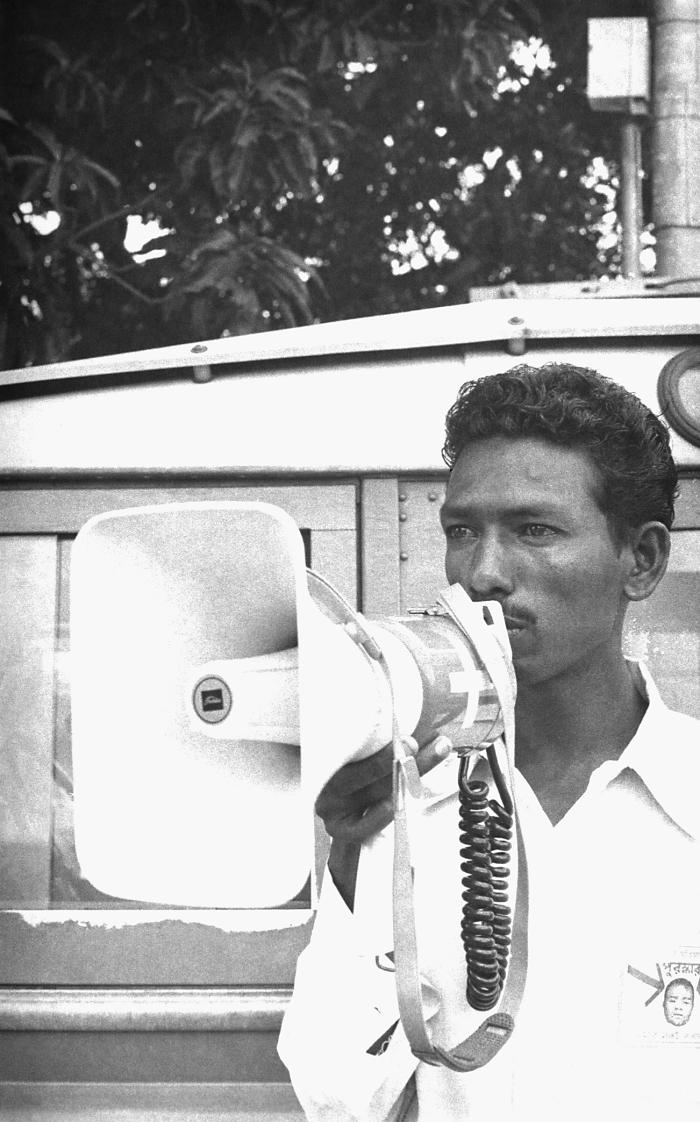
This local smallpox eradication team volunteer was using a handheld megaphone in order to notify villagers of the reward associated with reporting a confirmed smallpox case. If, indeed, a case was reported, from no matter the source, it was investigated fully, and if confirmed as a smallpox case by an epidemiologist, a reward was paid to the informant, no matter the age, and it was subsequently entered into the 'Containment Book'. The Containment Book was a ledger, which recorded all of the names of anyone living in, or within one half of a mile from a smallpox case, and subsequently all those listed were vaccinated against smallpox.